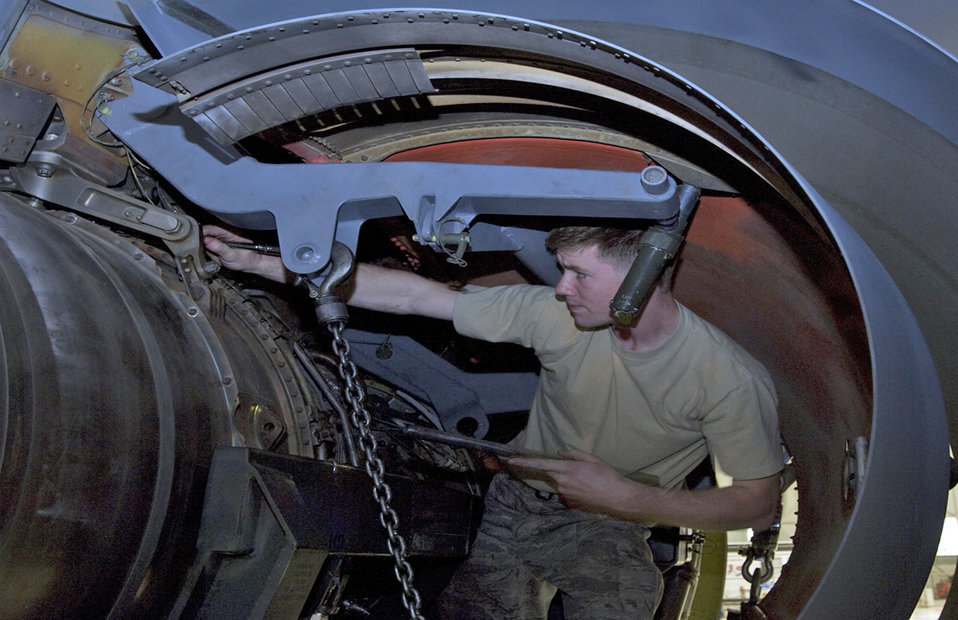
Maintainers remove 26-year-old engine

Airman 1st Class Richard Baker loosens bolts mounting a KC-135R Stratotanker F108-100 engine March 3, 2010, that will be sent to Tinker Air Force Base, Okla. Airman Baker is a mechanic assigned to the 22nd Aircraft Maintenance Squadron.